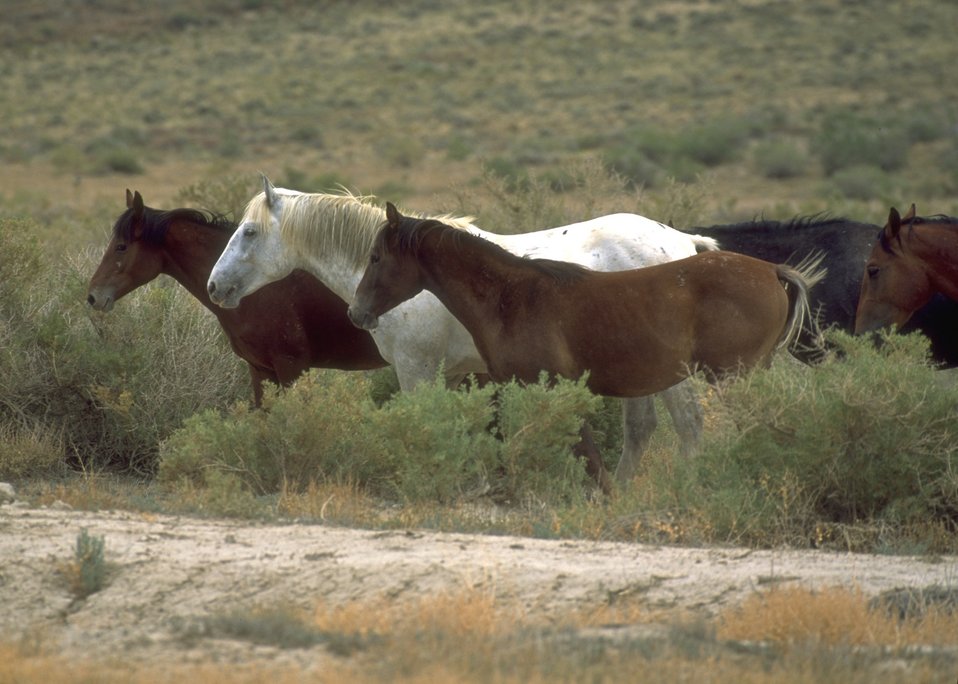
Wild horses, Rock Springs Field Office.